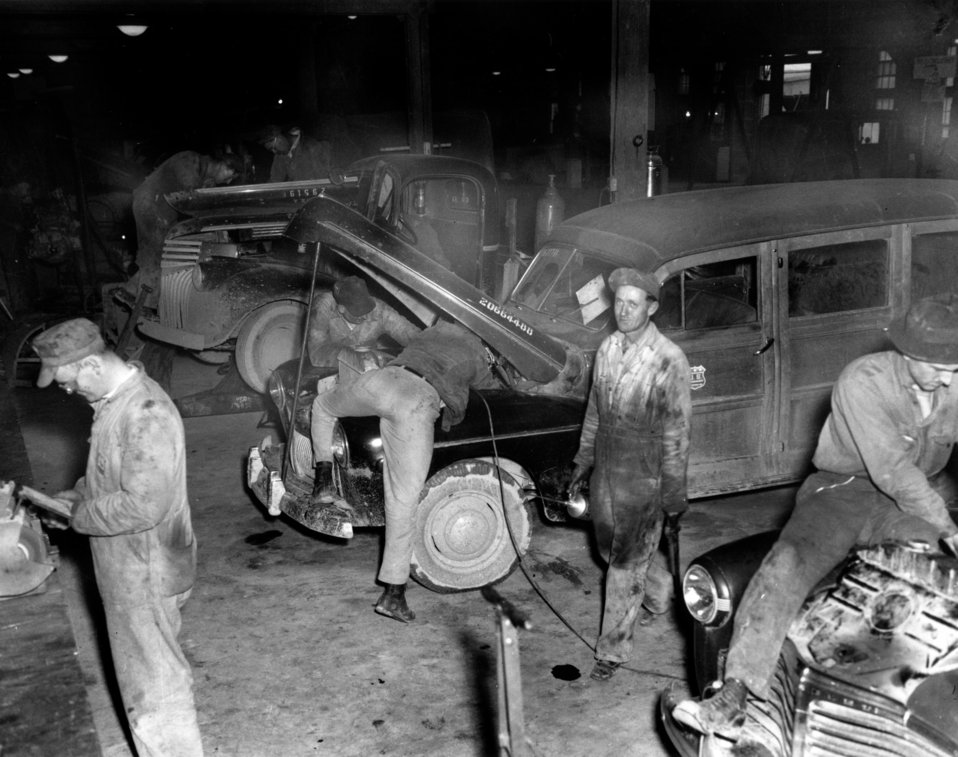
Army Activity at Oak Ridge